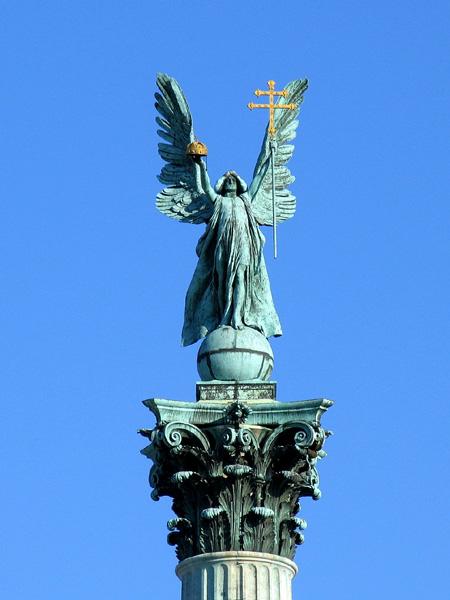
Statue of Archangel Gabriel in Budapest